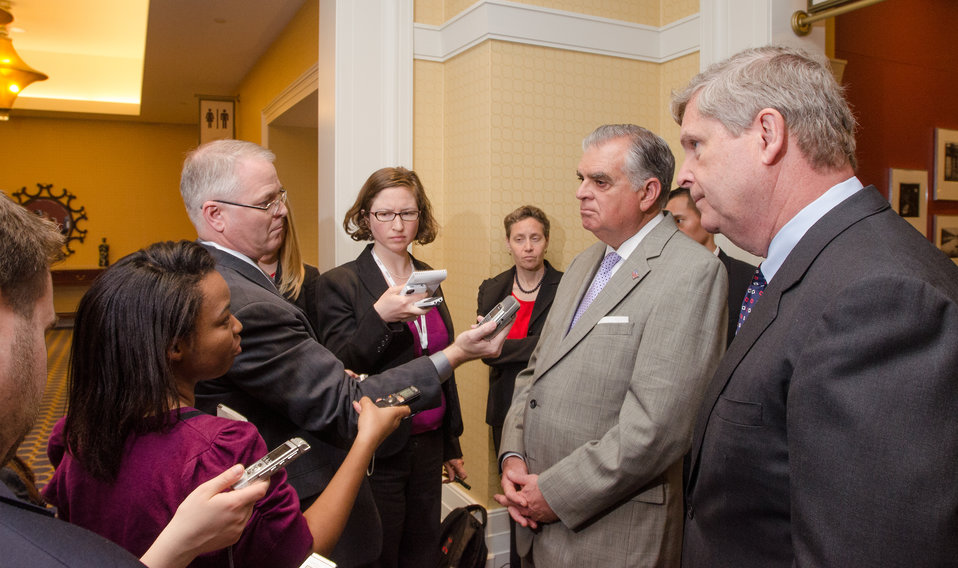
Agriculture Secretary Tom Vilsack (right) and U.S. Department of Transportation (DOT) Secretary Ray LaHood meet with reporters after the announcement today that the U.S. Department of Agriculture (USDA) is extending for five years its agreement to work with the Federal Aviation Administration (FAA) and other partners to help develop a viable biofuel for the aviation industry. The Secretary signed the agreement with U.S. Department of Transportation (DOT) Secretary Ray LaHood at the Advanced Biofuels Leadership Conference at Gaylord National Harbor in Maryland on Monday, April 15, 2013.